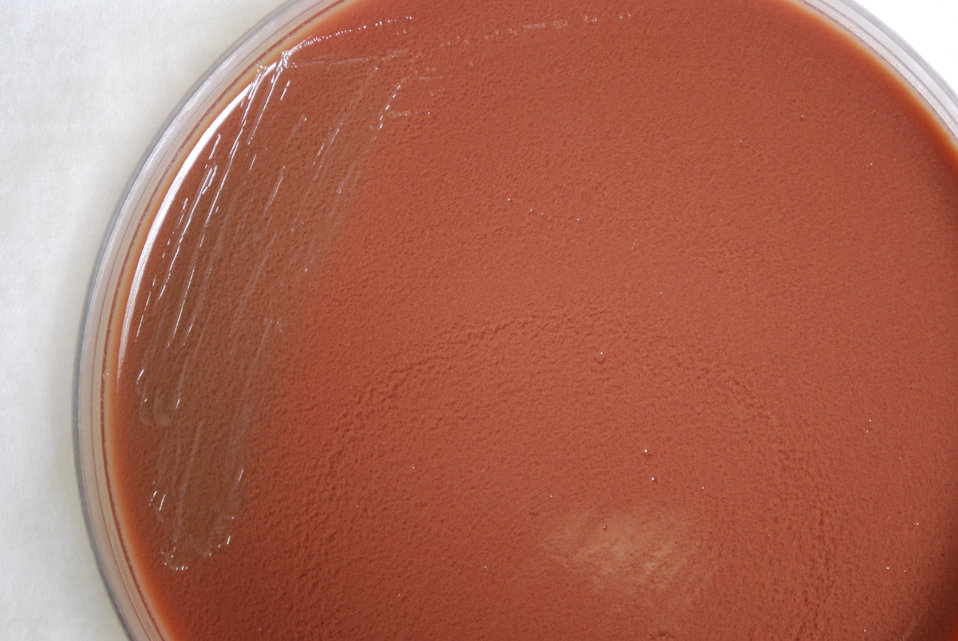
As a closer view of PHIL 12246, this photograph depicts the colonial morphology displayed by Gram-negative Yersinia pestis bacteria, which was grown on a medium of chocolate agar, for a 24 hour time period, at a temperature of 37�C.